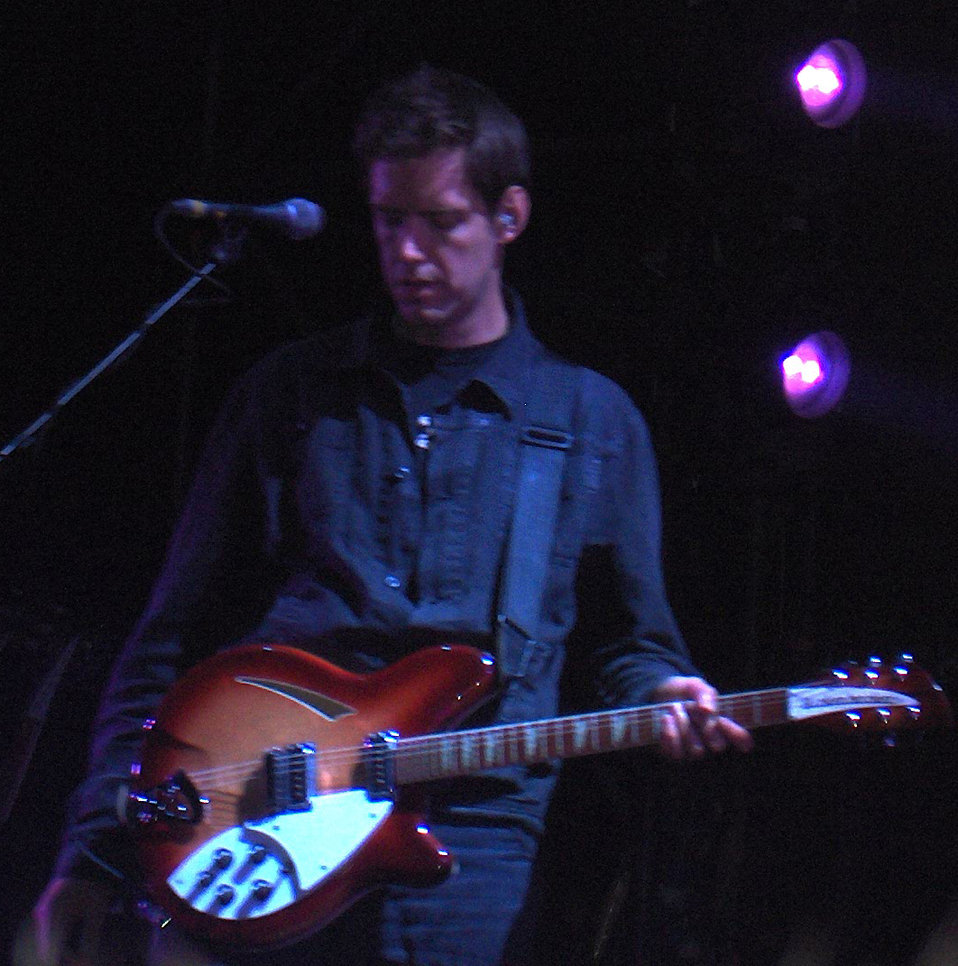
Deutsch: Ed O'Brien bei Rock Oz'Arénes in Avenches